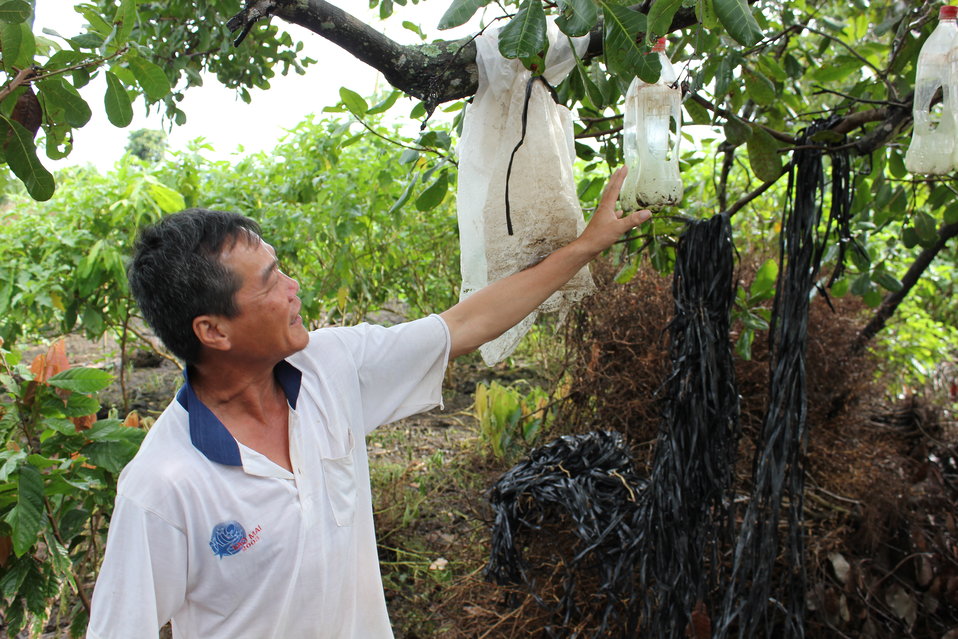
USAID supports cocoa cultivation in central Vietnam

Buon Don District, Dak Lak Province. August 6, 2013.